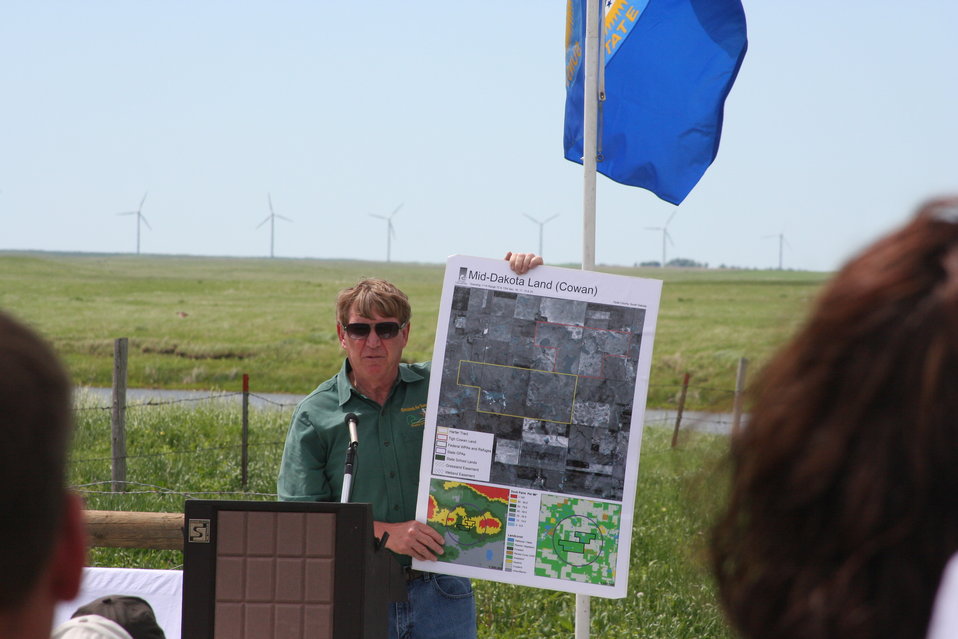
2013 Green Wing Dedication